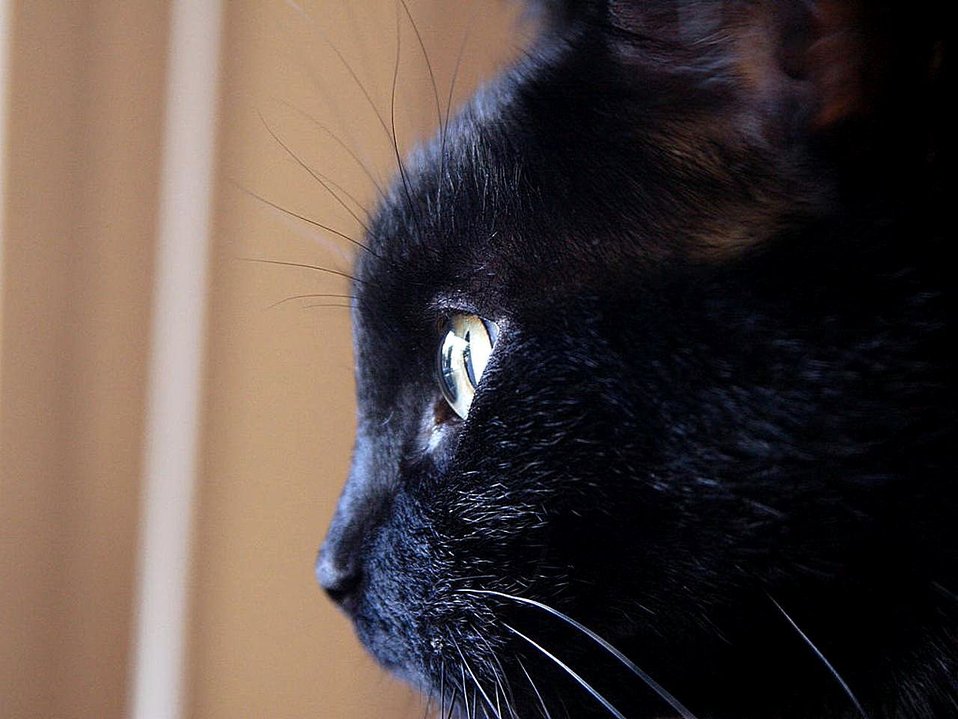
English:
Image title: Black cat Image from Public domain images website, http://www.public-domain-image.com/full-image/fauna-animals-public-domain-images-pictures/cats-and-kittens-public-domain-images-pictures/black-cat.jpg.html